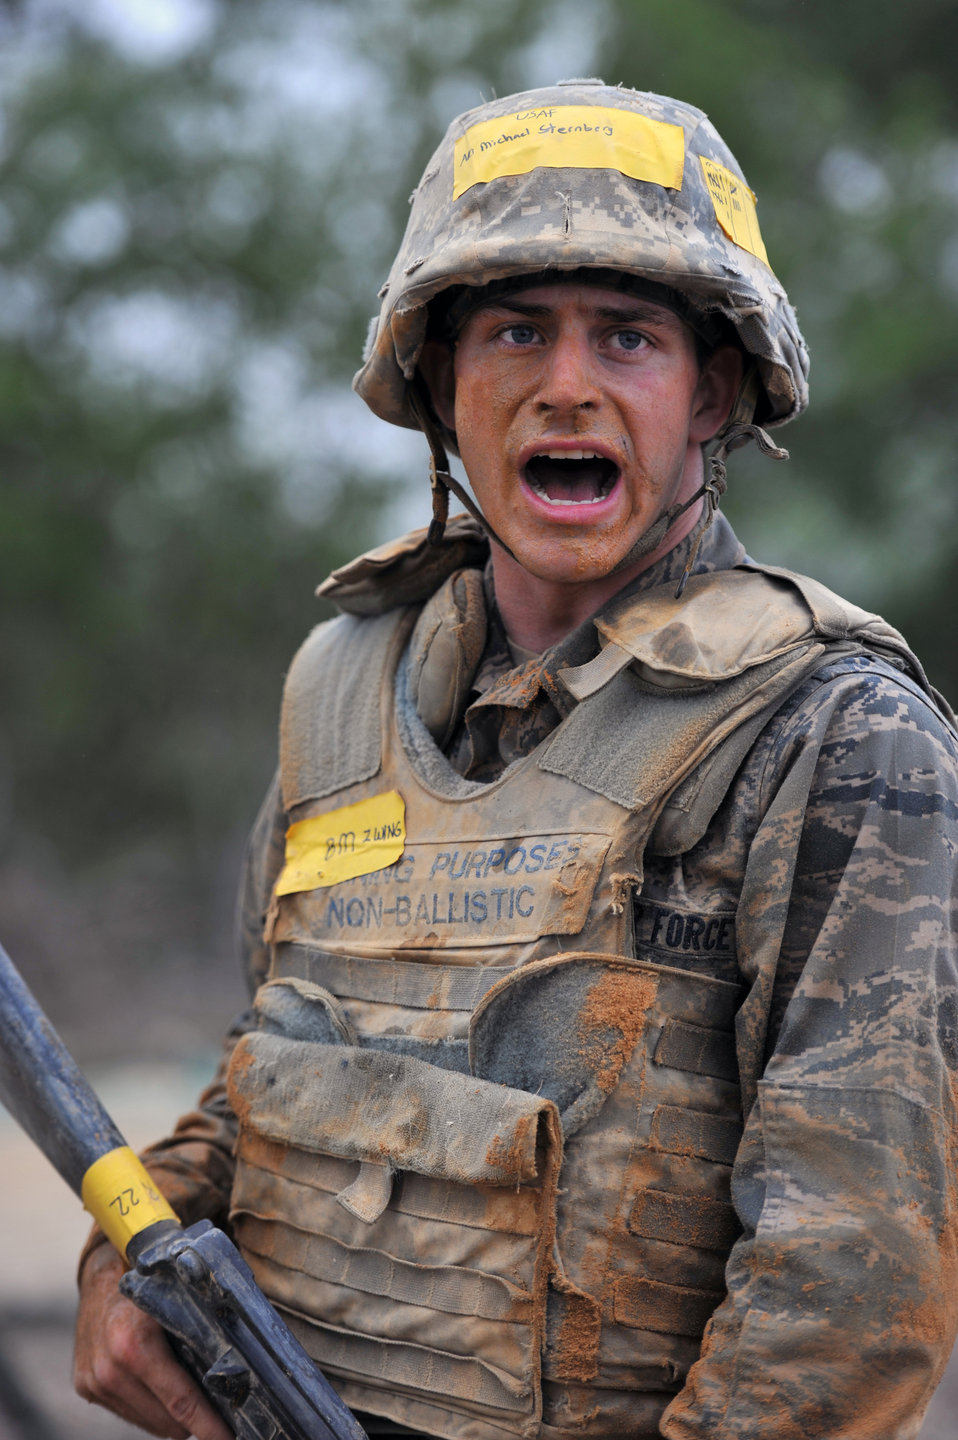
BEAST

Basic trainees go through their sixth week of Air Force basic military training at the Basic Expeditionary Airman Skills Training on May 25, 2011, at Lackland Air Force Base, Texas.